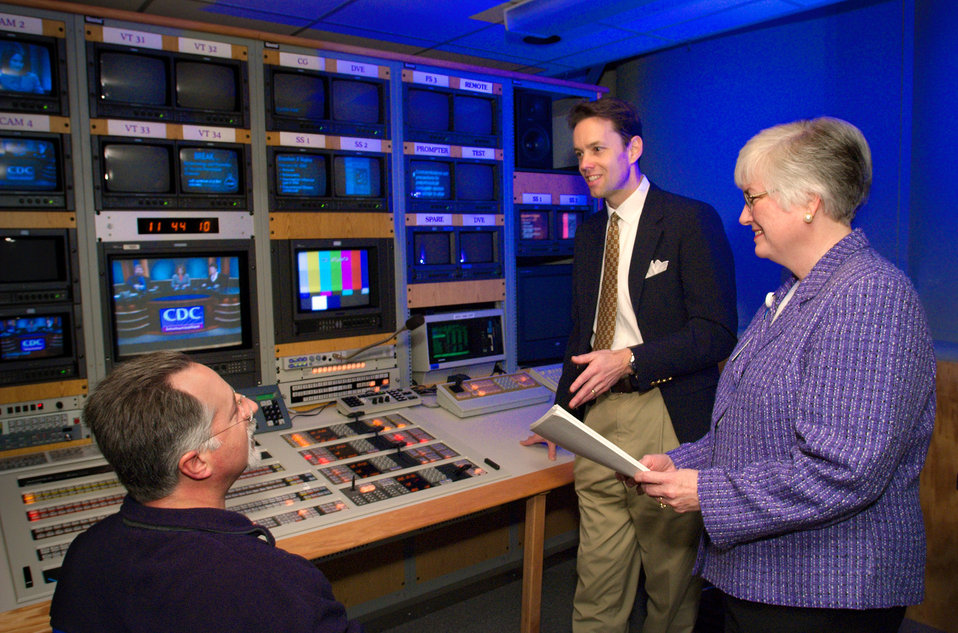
Photographed here in the CDC's broadcast control room were (left to right) Senior Editor/Technical Director Lee Bookman (seated), Acting Deputy Director of the Division of Creative Services, Brad Myers, and Acting Director of the Division of Creative Services Cheryl Lackey.